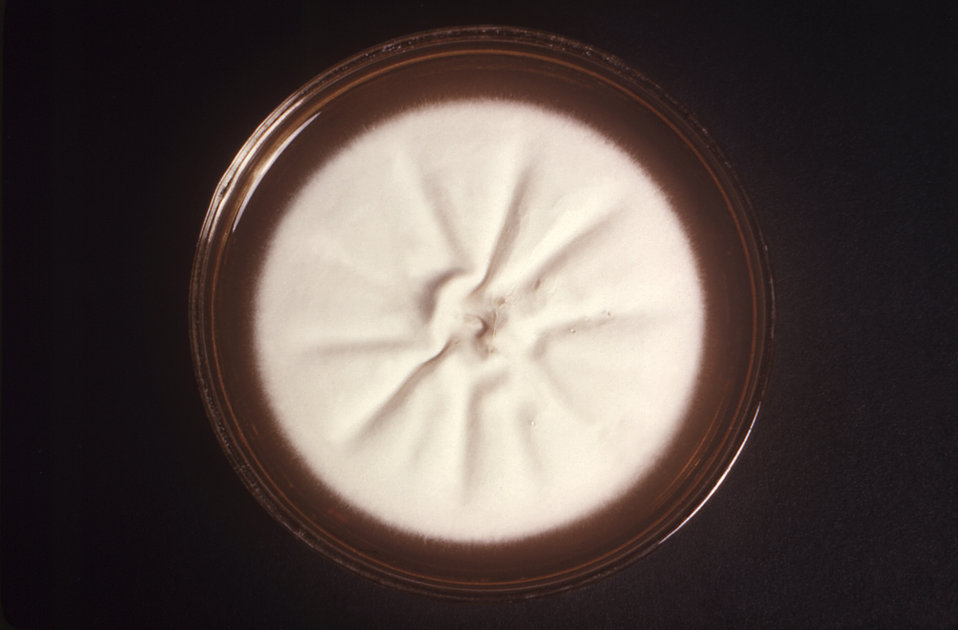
This is a frontal view of a Petri dish culture plate that had cultivated a large colony of the dermatophytic fungus, Trichophyton mentagrophytes var. quickeanum, which exhibited a white-beige coloration, and a powdery, slightly folded morphology. T. mentagrophytes colonial coloration ranges from white to bright yellowish-beige, to red-violet.